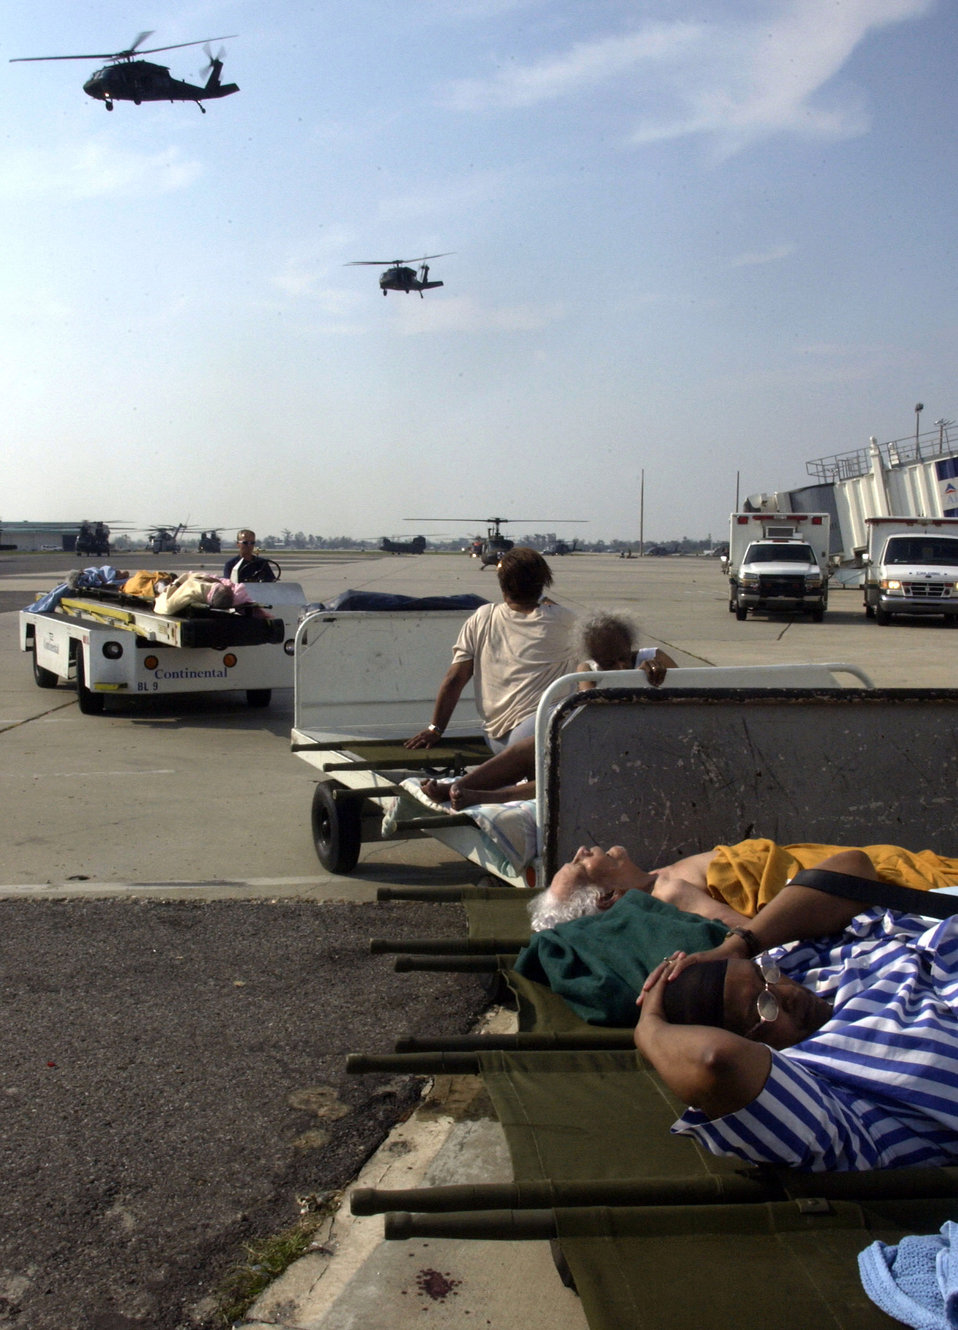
Air Force evacuates the sick and wounded

NEW ORLEANS -- Airport baggage haulers are used to move patients from rescue helicopters to triage areas inside the airport Sept. 2. Thousands of victims have been flown here since evacuations began Aug. 31.